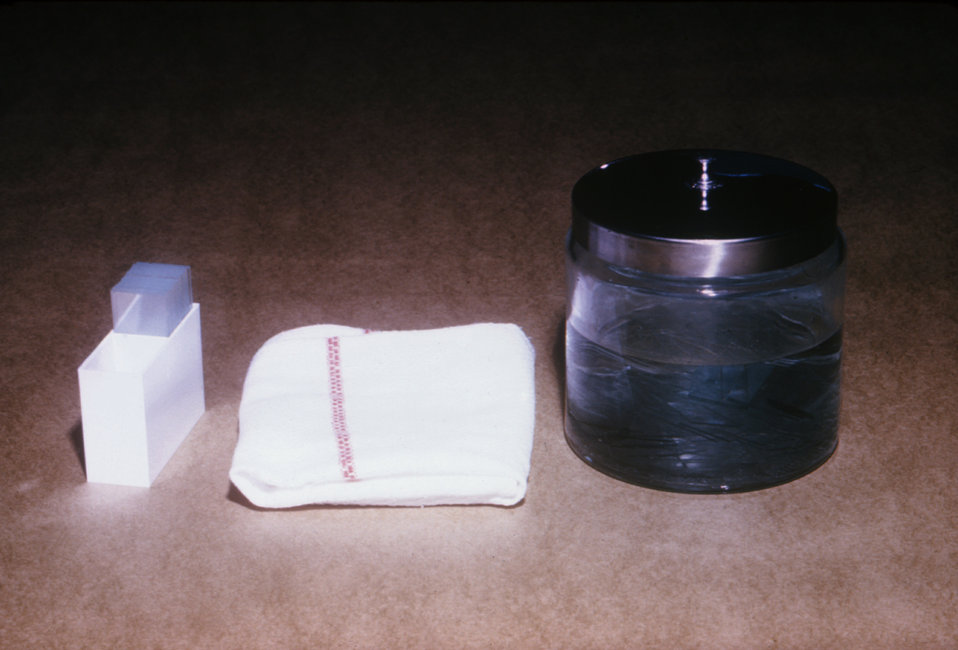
These are some items used preparing the skin surface of a site to be used for the extraction of a patient's blood sample.